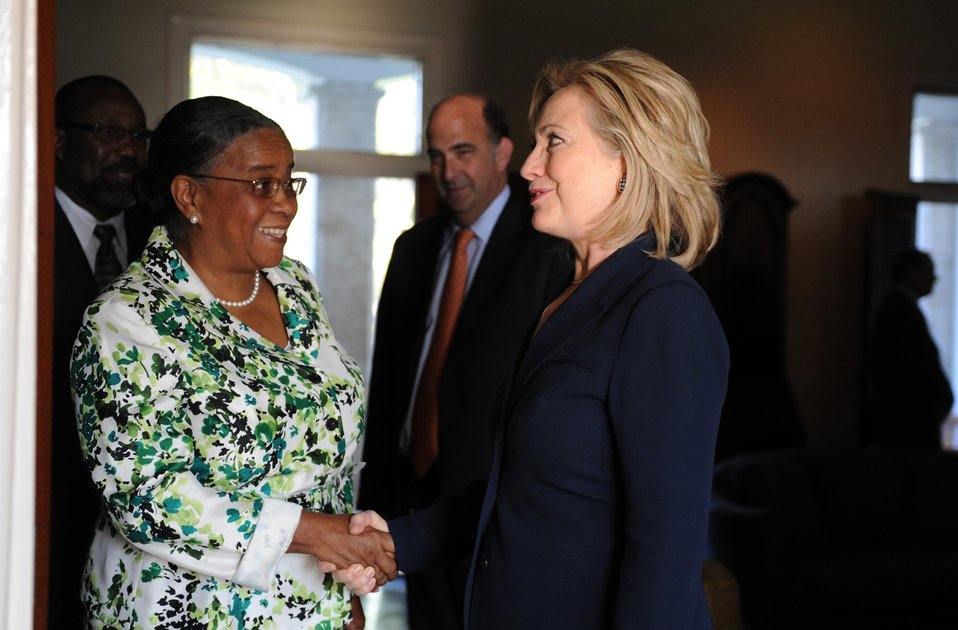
Secretary Clinton Meets With Haitian President Candidate Manigat

U.S. Secretary of State Hillary Clinton meets with presidential candidate Mirlande Manigat as U.S. Ambassador to Haiti Kenneth H. Merten, center, looks on in Port-au-Prince, Haiti, on January 30, 2011.